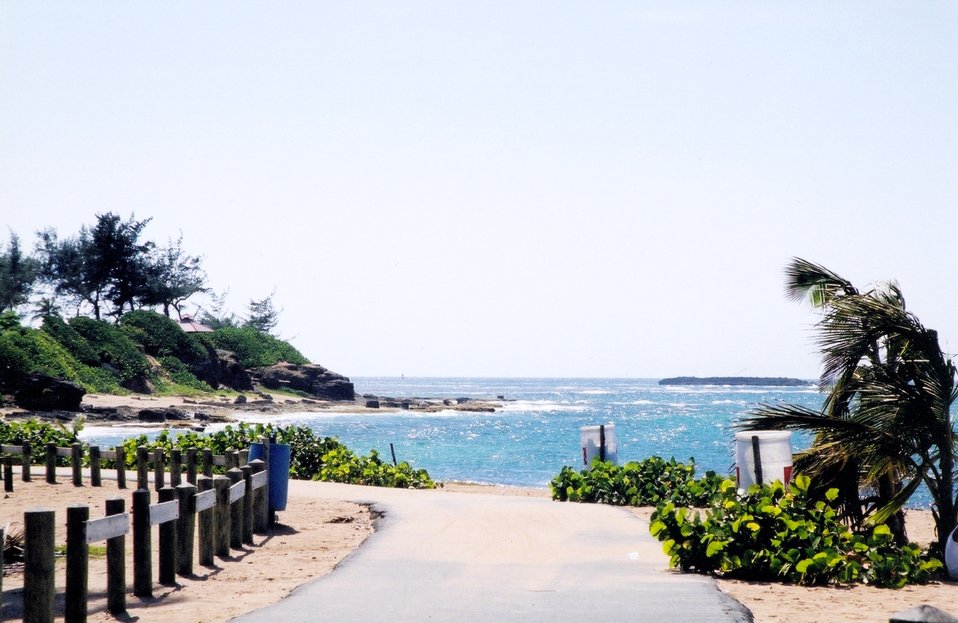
A shoreside trail on St. Thomas.